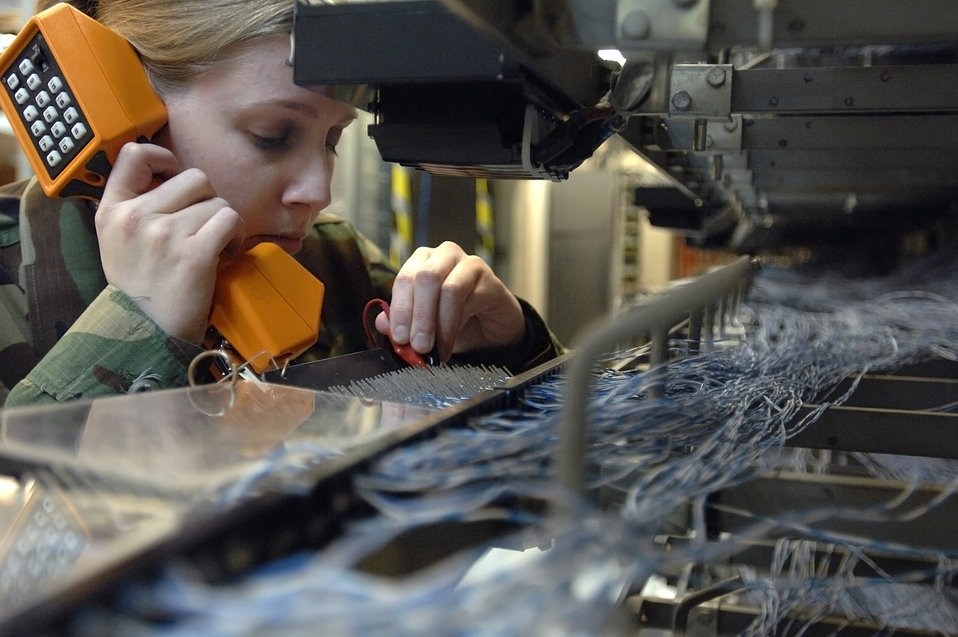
Testing the tele lines

Senior Airman Erin Gilmore, a voice network systems journeyman, uses a wrap tool to terminate a jumper cable telephone wire to an line equipment number Feb. 21 at Langley Air Force Base, Va. More than 22,000 wires connect the many telephones on Langley AFB. Airman Gilmore is assigned to the 1st Communications Squadron.